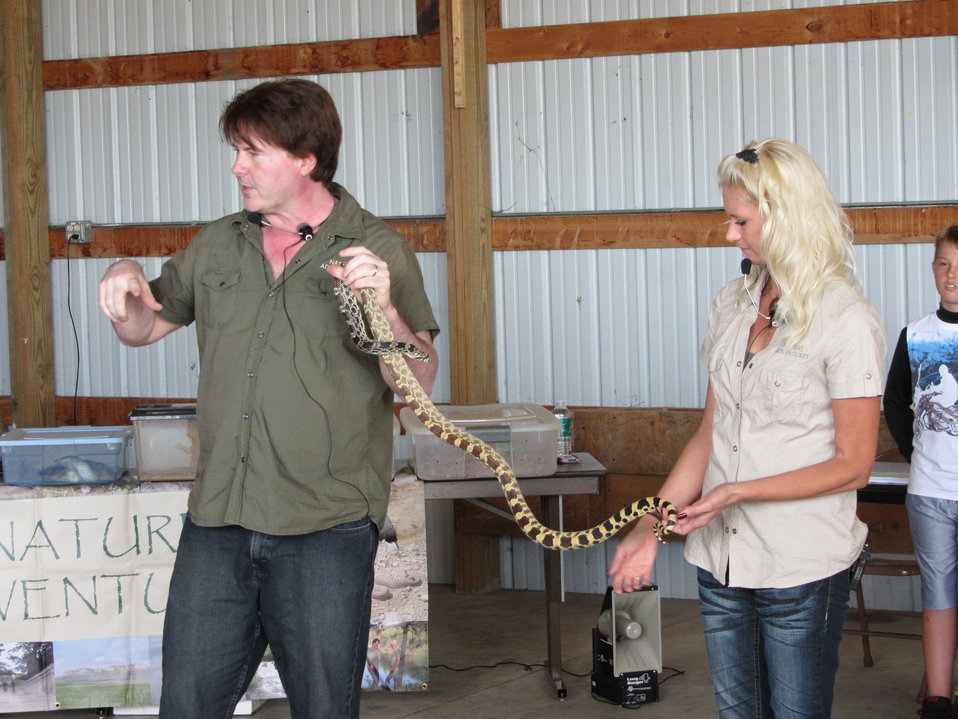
2011 Huron Prairie Fest